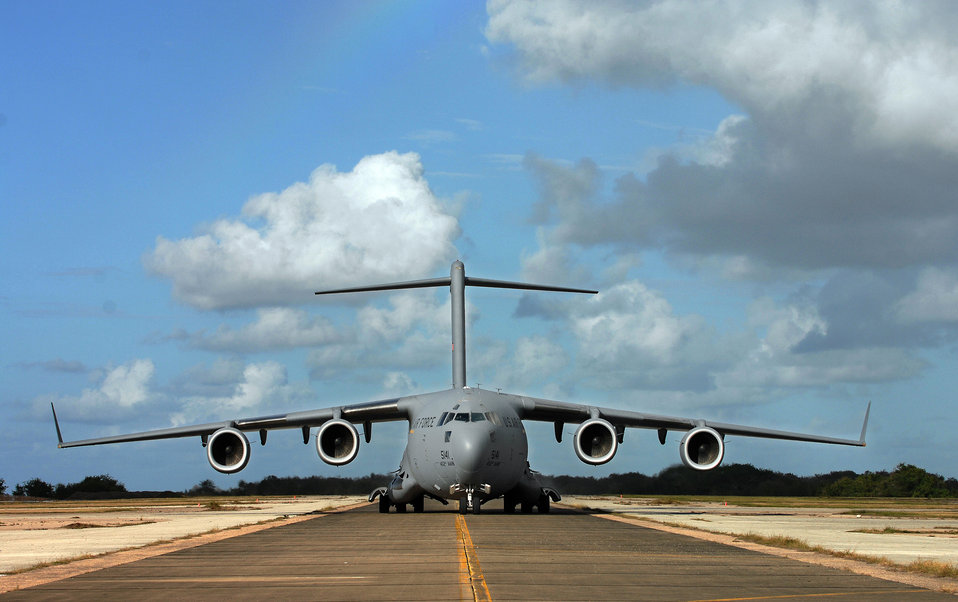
No beach vacation here

A C-17 Globemaster III from the 452nd Air Mobility Wing at March Air Reserve Base, Calif., taxis May 2 at Ramey Field, Puerto Rico, during Patriot Hoover 2009. The exercise is a large-scale air mobility exercise involving units with Air Force Reserve Command, Puerto Rico's Air National Guard, and units from the FBI.